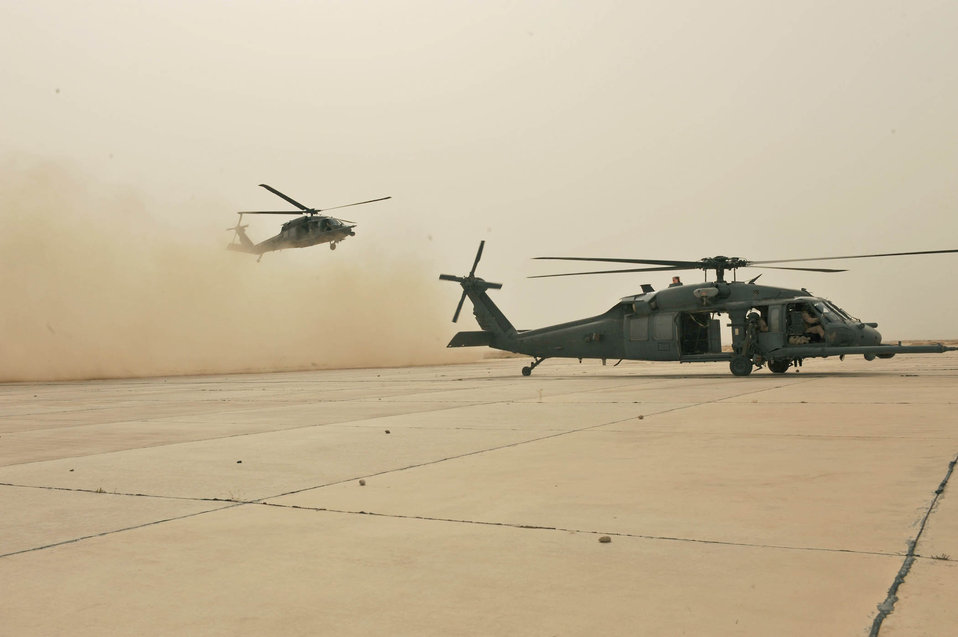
Personnel recovery team lives up to motto

HH-60G Pave Hawk aircrews assigned to the 64th Expeditionary Rescue Squadron practice tactical maneuvers during a training flight May 15, 2010, near Joint Base Balad, Iraq.